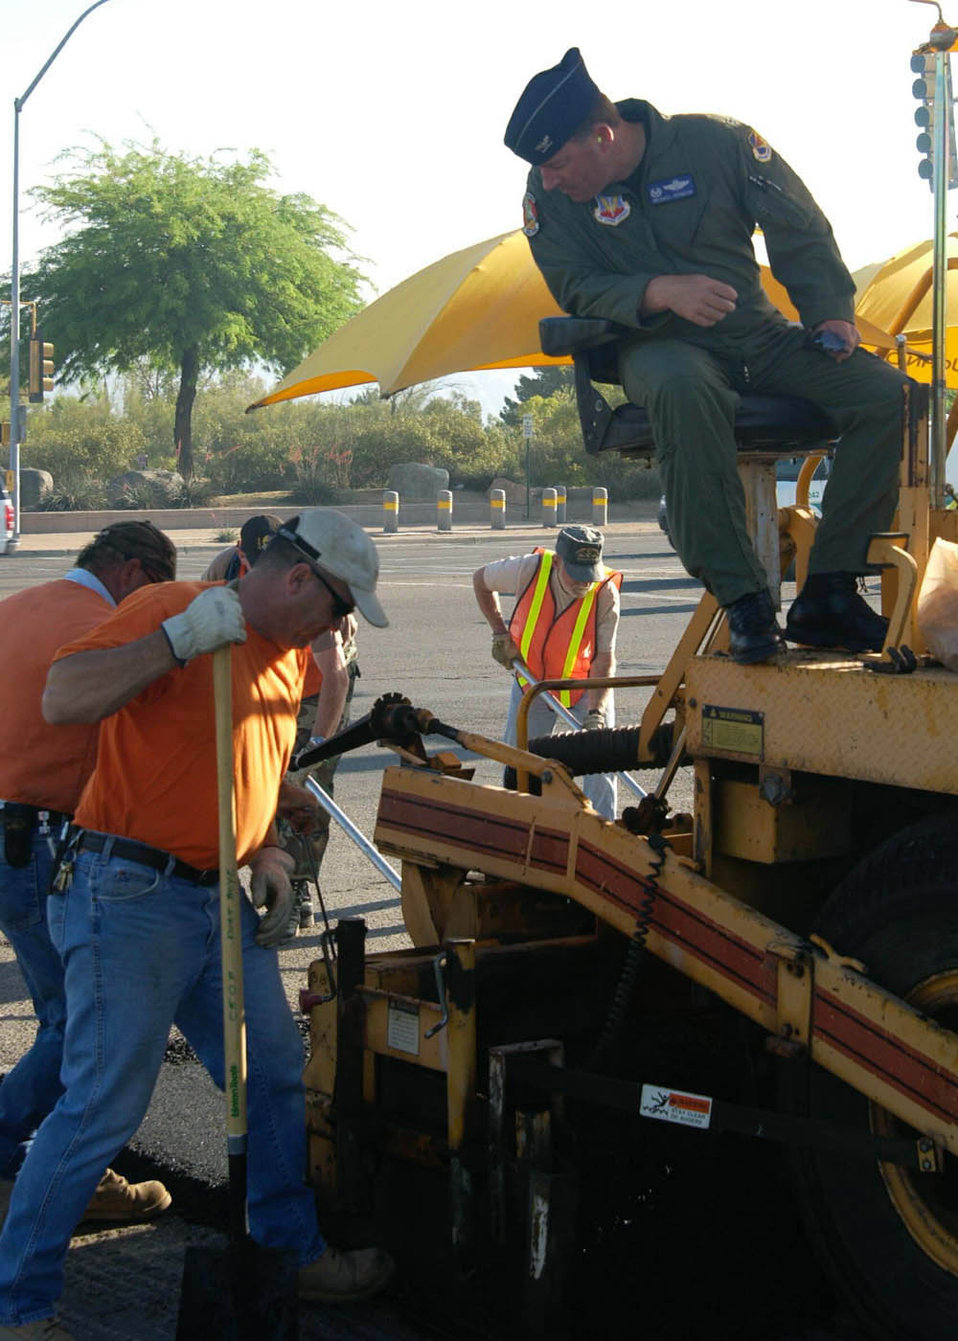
Pavement pounders

DAVIS-MONTHAN AIR FORCE BASE, Ariz. -- Col. Michael Spencer (right) and contractors with the 355th Civil Engineer Squadron use an asphalt lay-down machine to pave a new entrance to a gate here. Colonel Spencer is the 355th Wing commander.